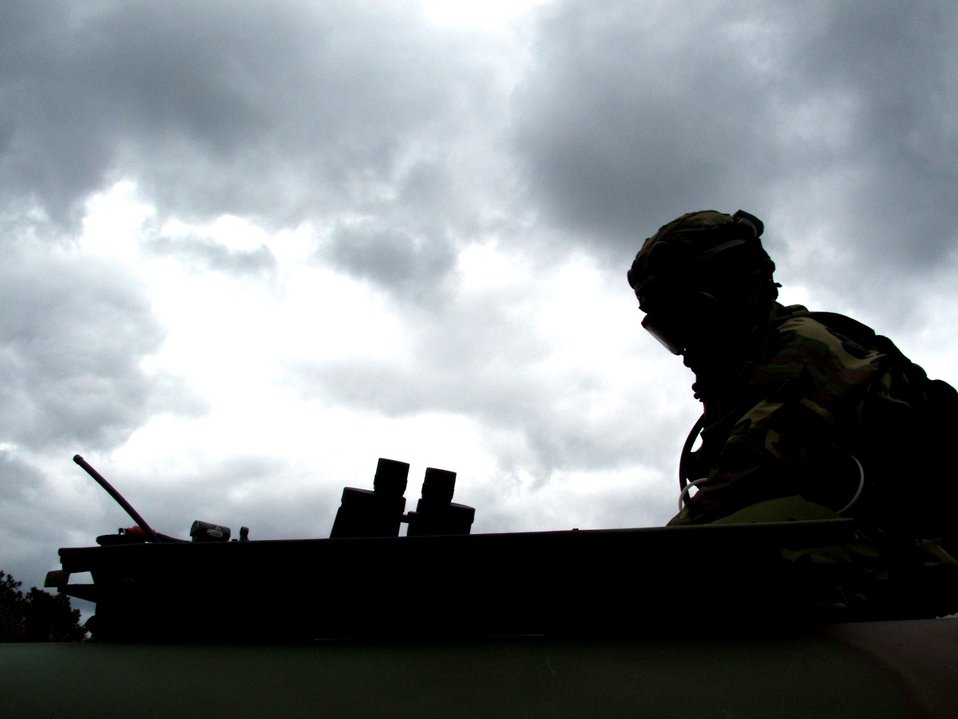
Eagle Flag

NAVAL AIR ENGINEERING STATION LAKEHURST, N.J. (AFPN) -- Senior Airman Charles Nelson stands guard in the turret of his Humvee during exercise Eagle Flag 06-1 here. The Airman was on guard duty Oct. 23. He deployed here from the 613th Security Forces Squadron at Anderson Air Force Base, Guam, is here to support the 613th Contingency Response Group.